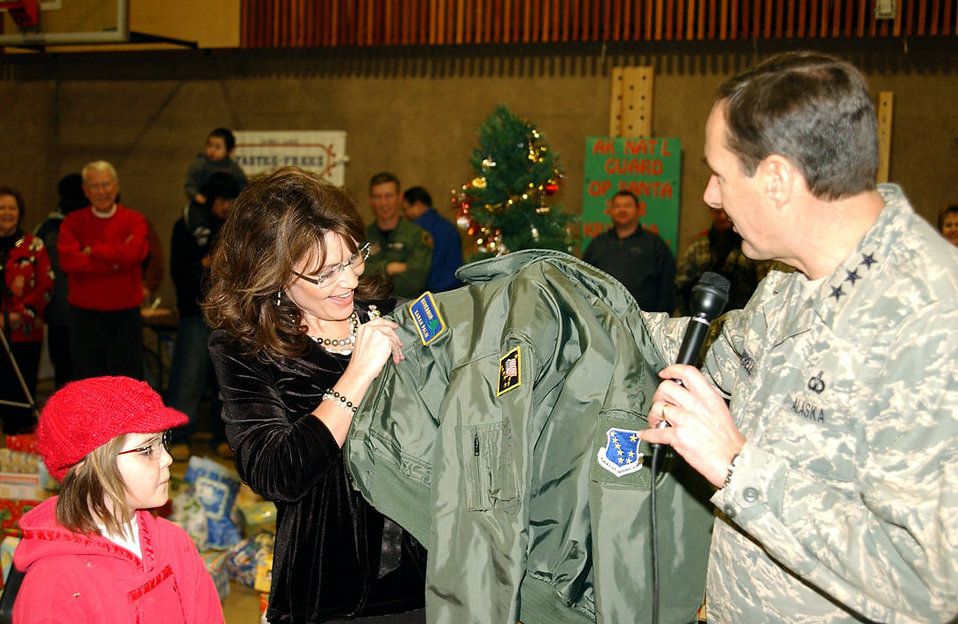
Alaska Guard continues Operation Santa Claus tradition

Alaska Gov. Sarah Palin receives a flight jacket from Lt. Gen. Craig E. Campbell as a token of thanks for supporting the Alaska National Guard during Operation Santa Claus 2008 on Dec. 6 in Kivalina, Alaska. Operation Santa Claus, an Alaska National Guard community relations and support program, provides toys, books and school supplies for young people in communities across the state. General Campbell is Alaska's adjutant general.